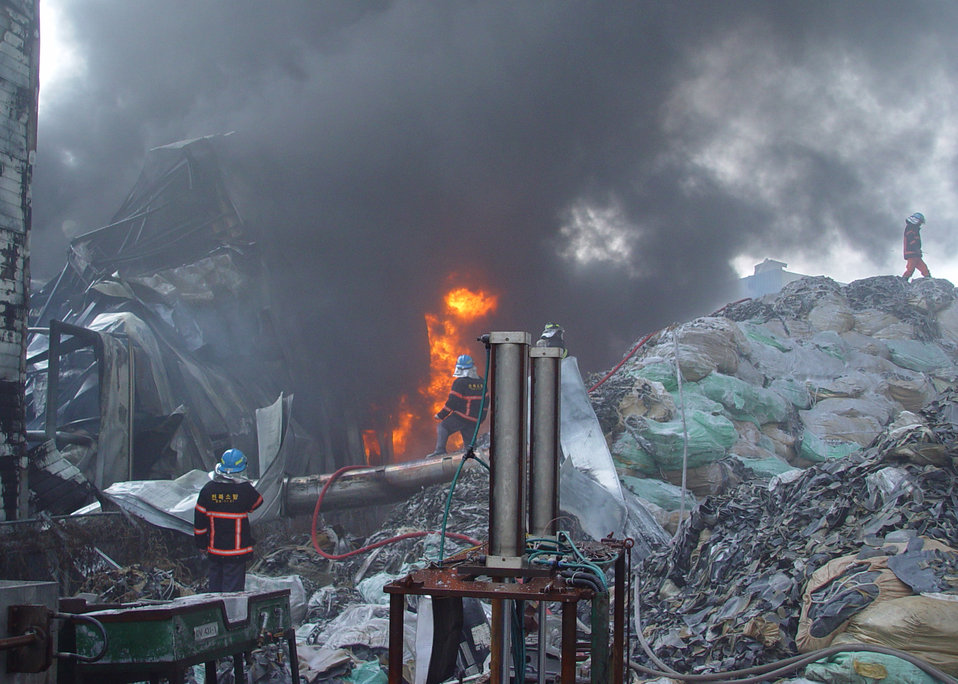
Kunsan firefighters assist local fire department

Gunsan City firefighters control fire here Dec. 3. Airmen from the 8th Civil Engineer Squadron fire department work together with local community fire departments to put out a large industrial fire.